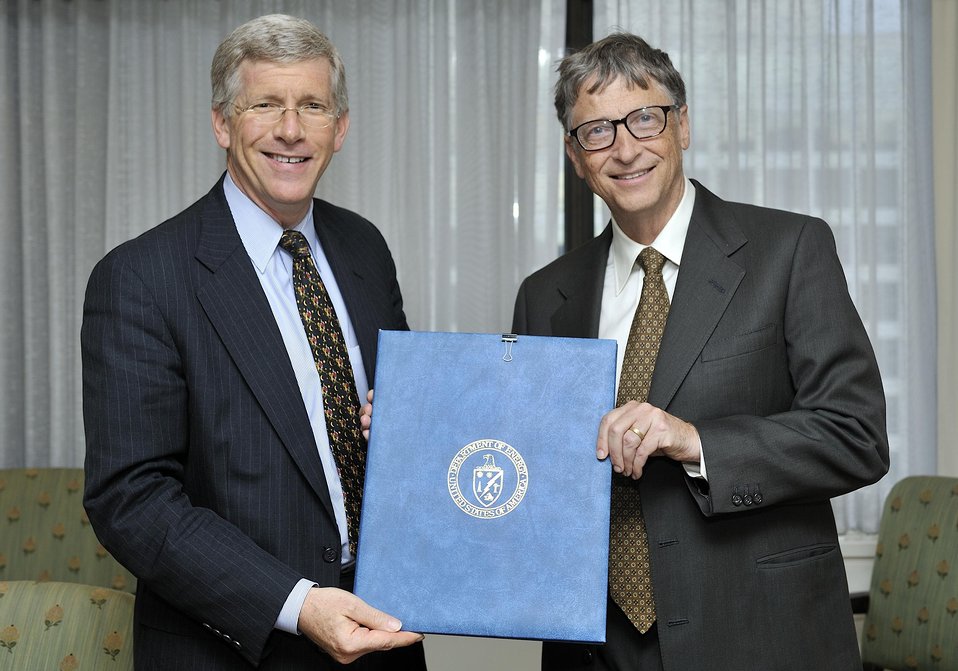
Ken Shipp/DOE Photo

Deputy Secretary D. Poneman is visited by W. (Bill) H. Gates, founder, technology advisor of Microsoft Corporation at The Department of Energy on October 8, 2013.